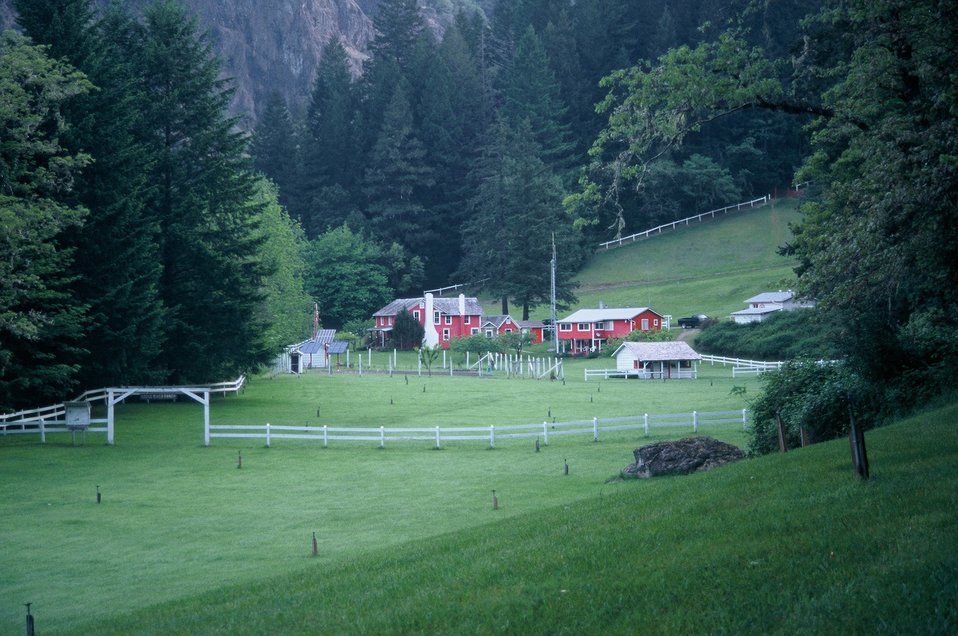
Wild section of the Rogue River from Grave Creek to Foster Bar May 19 to May 22.